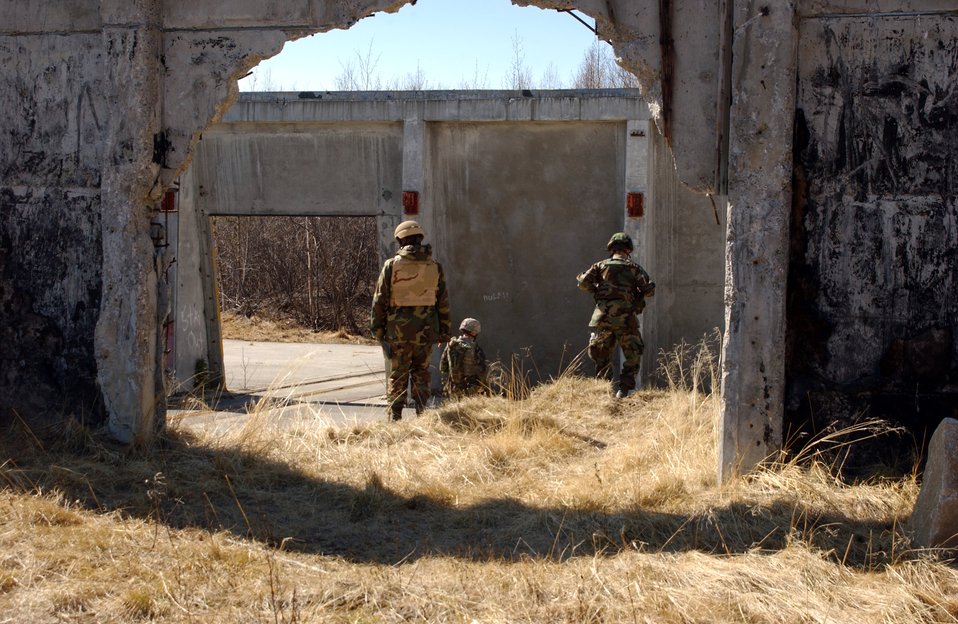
Practice makes perfect during Ursa Minor

Capt. Eric Sobecki, Senior Airman John Tranum and Senior Airman Reynold Black find a designated location during a land navigation exercise May 16. The three 3rd Air Support Operations Squadron Airmen are participating in Operation Ursa Minor, a three-day field training exercise at Eielson Air Force Base, Alaska, designed to provide hands-on combat training and experience to Airmen before they deploy to a combat area.